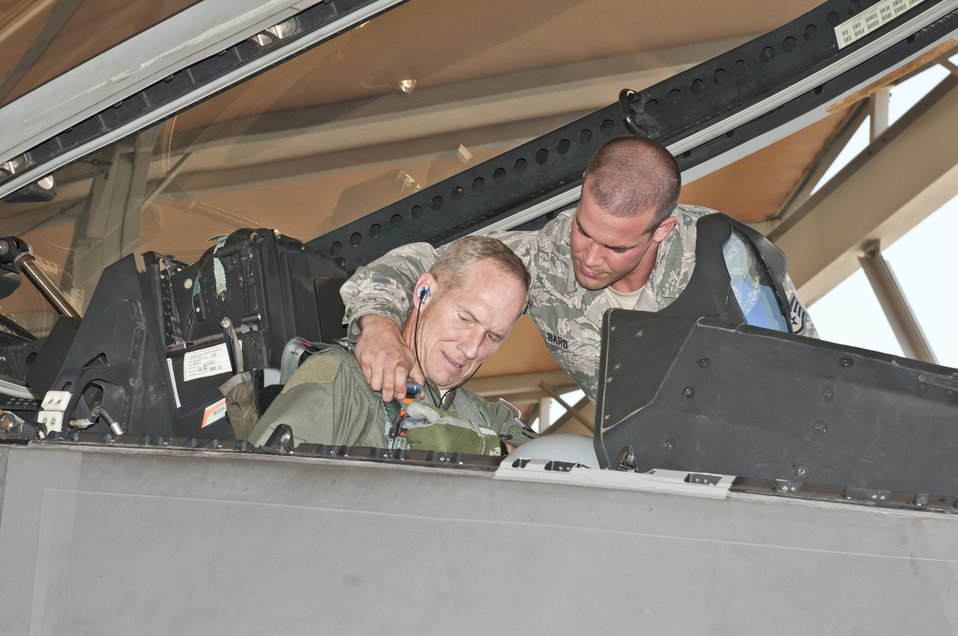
ACC commander qualifies in F-22

Staff Sgt. Joshua Bard straps Gen. Mike Hostage into an F-22 Raptor for his qualification flight at Tyndall Air Force Base, Fla., June 27, 2012. Hostage is the commander of Air Combat Command and Bard is a crew chief with the 43rd Aircraft Maintenance Unit.